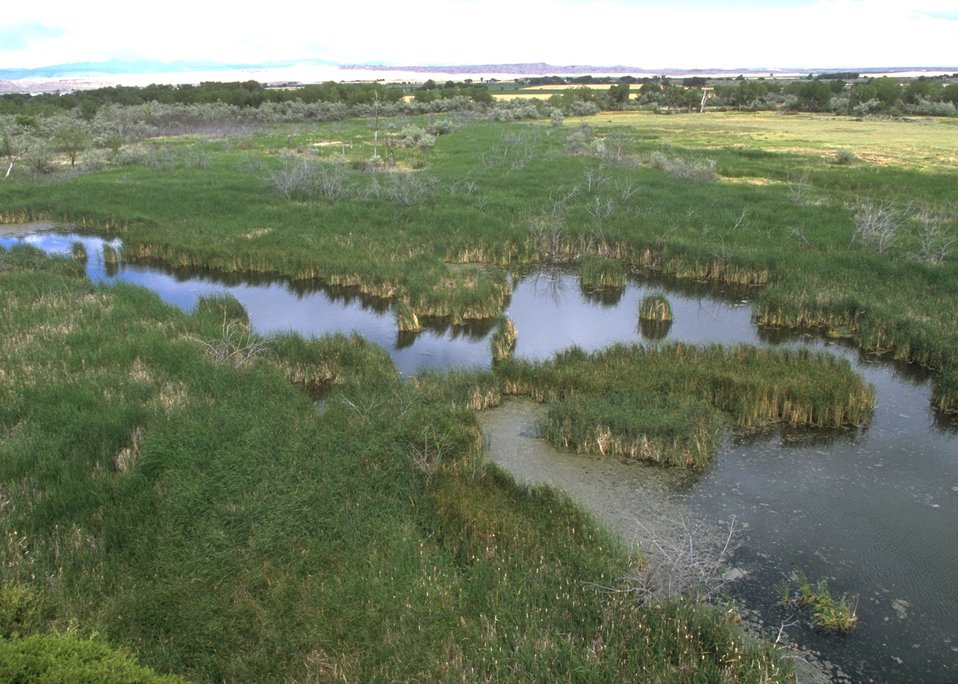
Duck Swamp Interpretive Area, Worland Field Office.